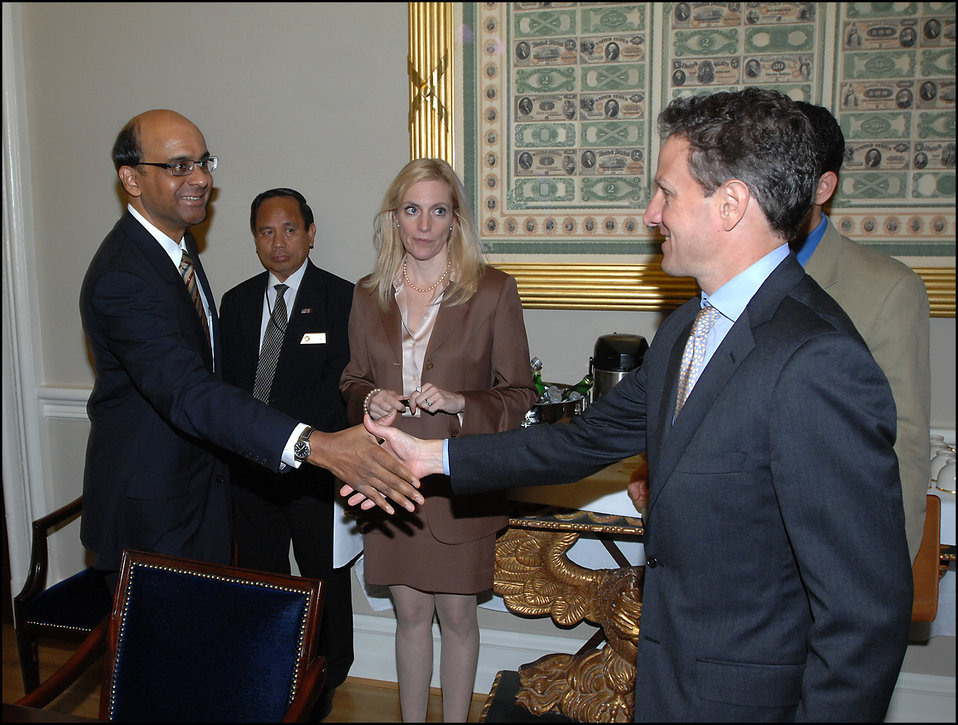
Singaporean Finance Minister Tharman

On August 5, 2009, Secretary Geithner met with Singaporean Finance Minister Tharman.